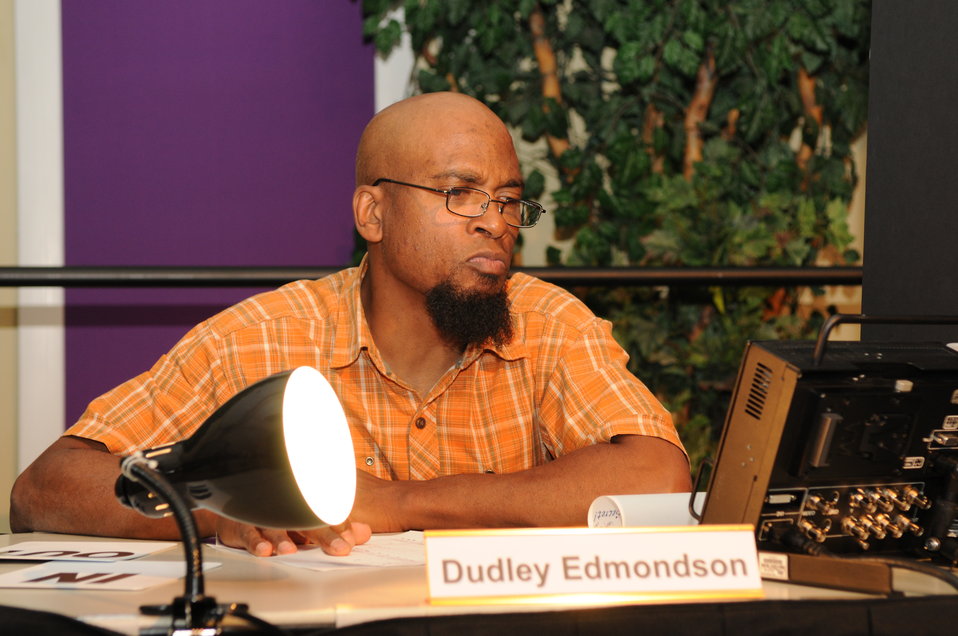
Artwork Judge

The U.S. Fish & Wildlife Service sponsored the 2012 Federal Duck Stamp Art Contest September 28 and 29 in Ogden, Utah, at Weber State University. A panel of five judges was responsible for choosing the art work used to design the 2013-2014 Migratory Bird Hunting and Conservation Stamp.